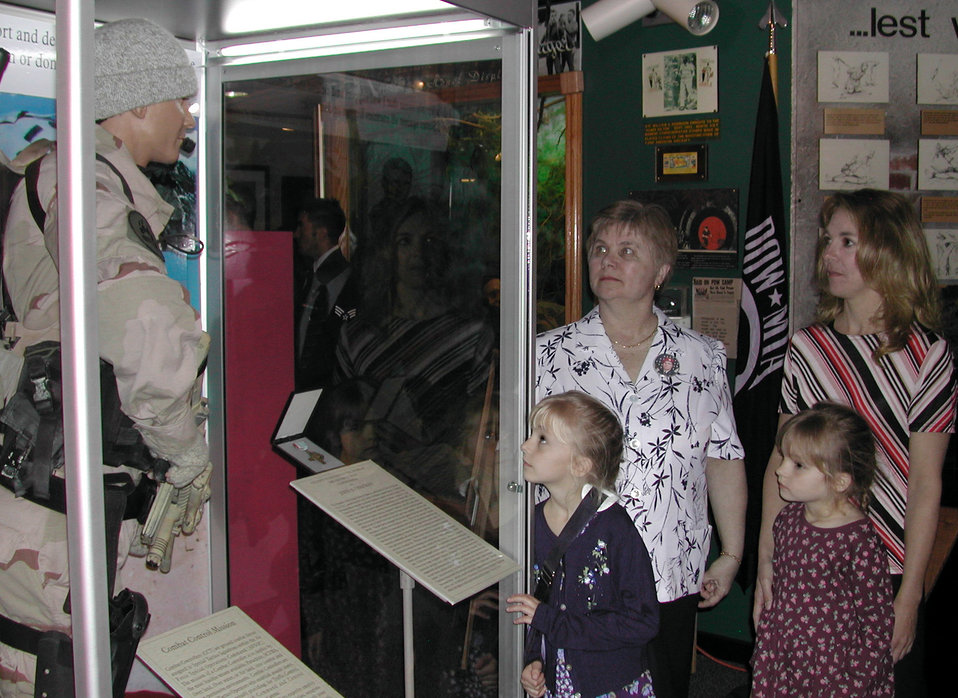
Enlisted Heritage Hall honors fallen Airman

MAXWELL AIR FORCE BASE, Ala. -- (Clockwise) Tech. Sgt. John Chapman's mother, Terry Giaccone; his wife, Valerie; and their daughters, Madison and Brianna; view an exhibit dedicated to him in the Enlisted Heritage Hall on Gunter Annex. A combat controller and Air Force Cross recipient, Sergeant Chapman was killed March 4, 2002, during an operation in Afghanistan.